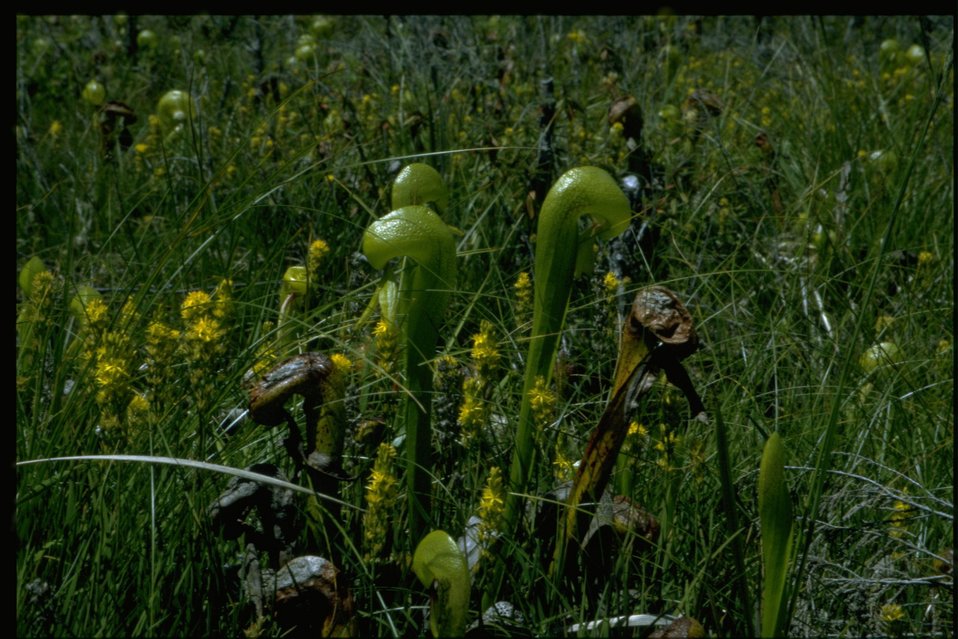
Medium shot of Cobra Lily, Darlingtonia californica.